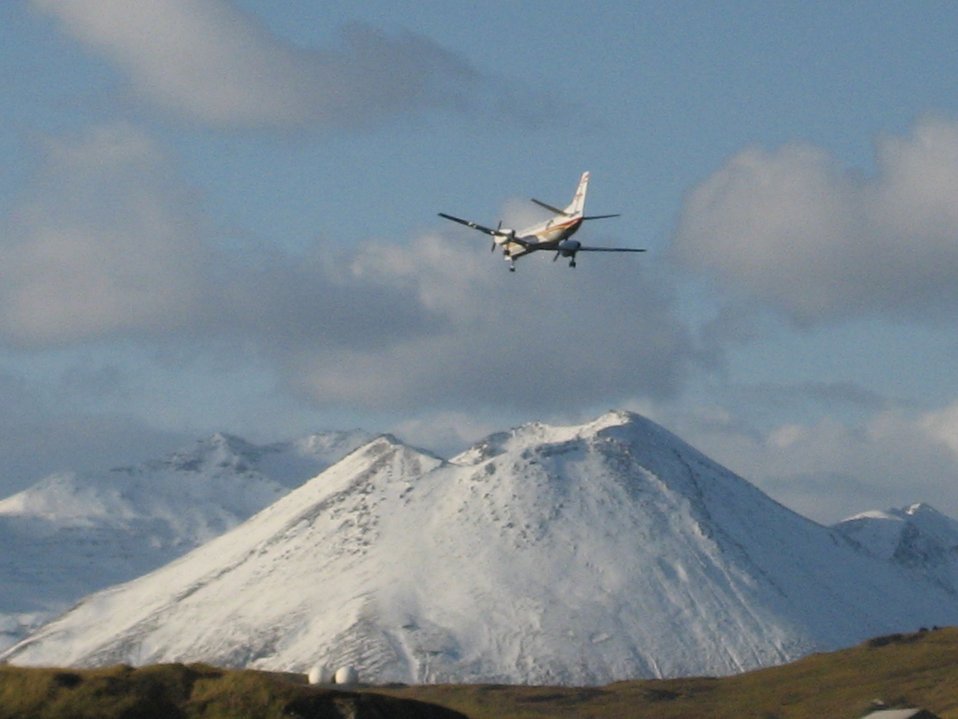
Looking for an airport? No, just making the final approach to Dutch Harbor Airport. This unique view was taken from the bridge of a ship heading into Dutch Harbor.